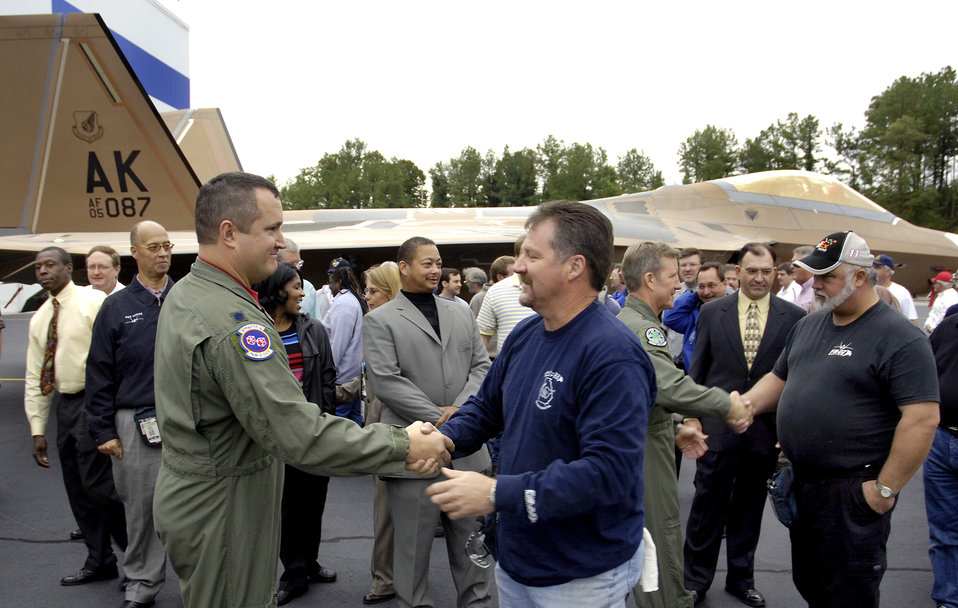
First Pacific F-22 rolls out

Lt. Col. Michael Shower (front) and Brig. Gen. Herbert Carlisle shake hands with Lockheed Martin employees after the roll-out of the Pacific Theater's first combat ready F-22 Raptor, destined for the 3rd Wing at Elmendorf Air Force Base, Alaska. General Carlisle is the 3rd Wing commander, and Colonel Shower is the 90th Fighter Squadron's Detachment 1 commander.